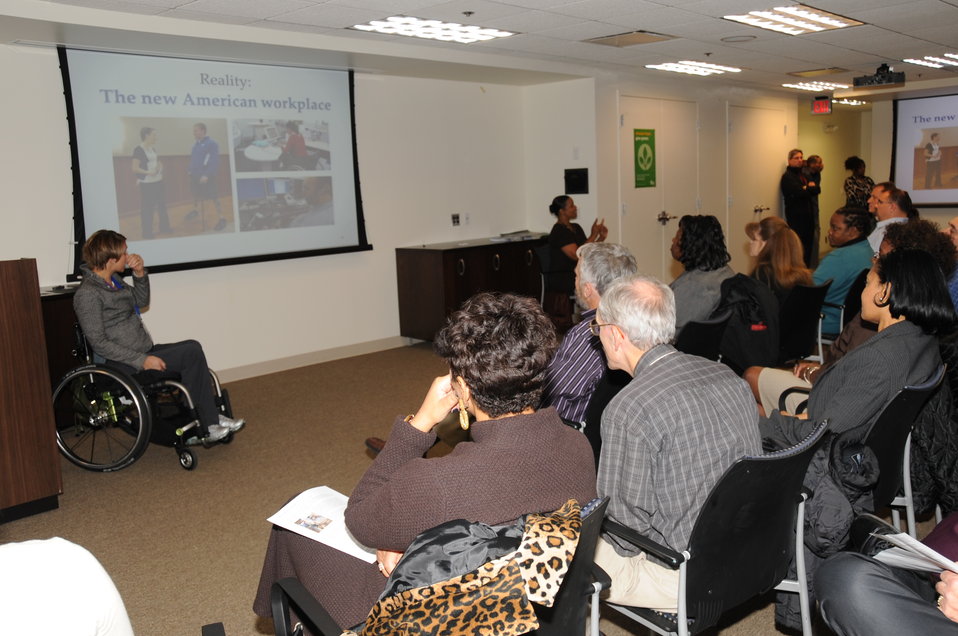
Honoring and Celebrating our Veterans

11.07.2012 Employees gathered in the Arlington Office to honor FWS Veterans